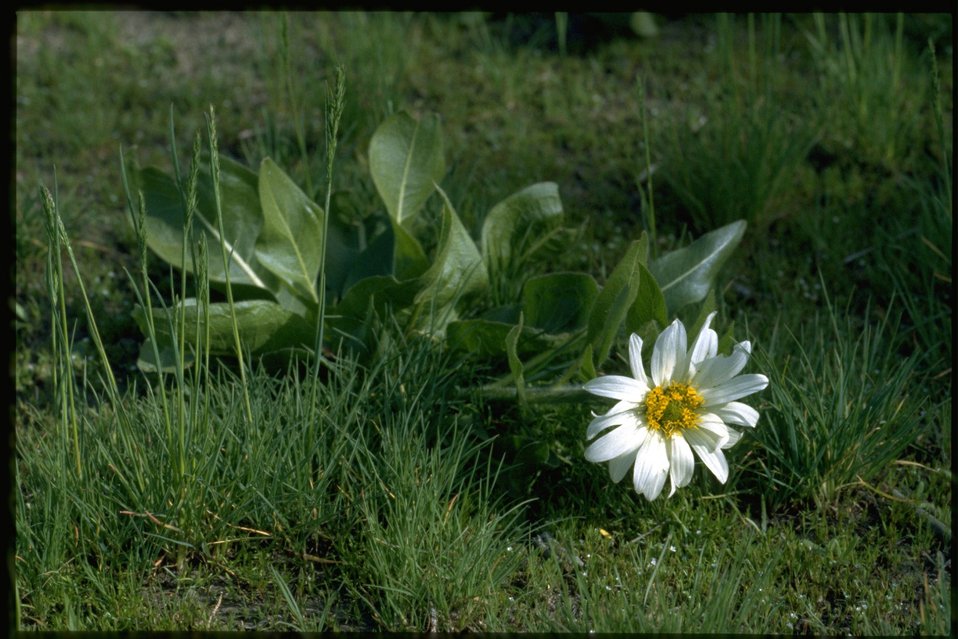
Medium shot of White-rayed Mule's-ears wildflower (Wyethia Helianthoides).